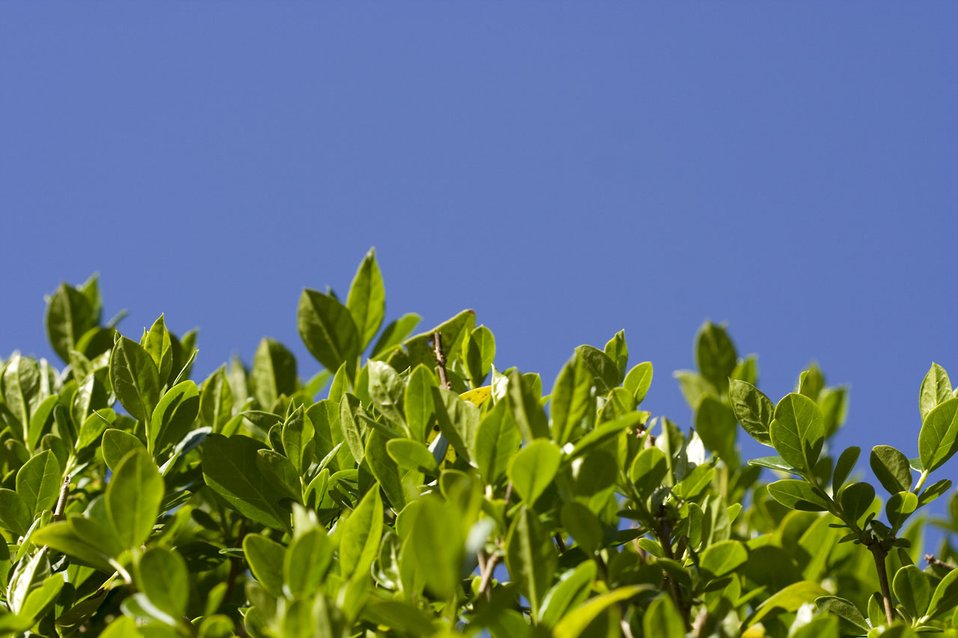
Hedge against blue sky.